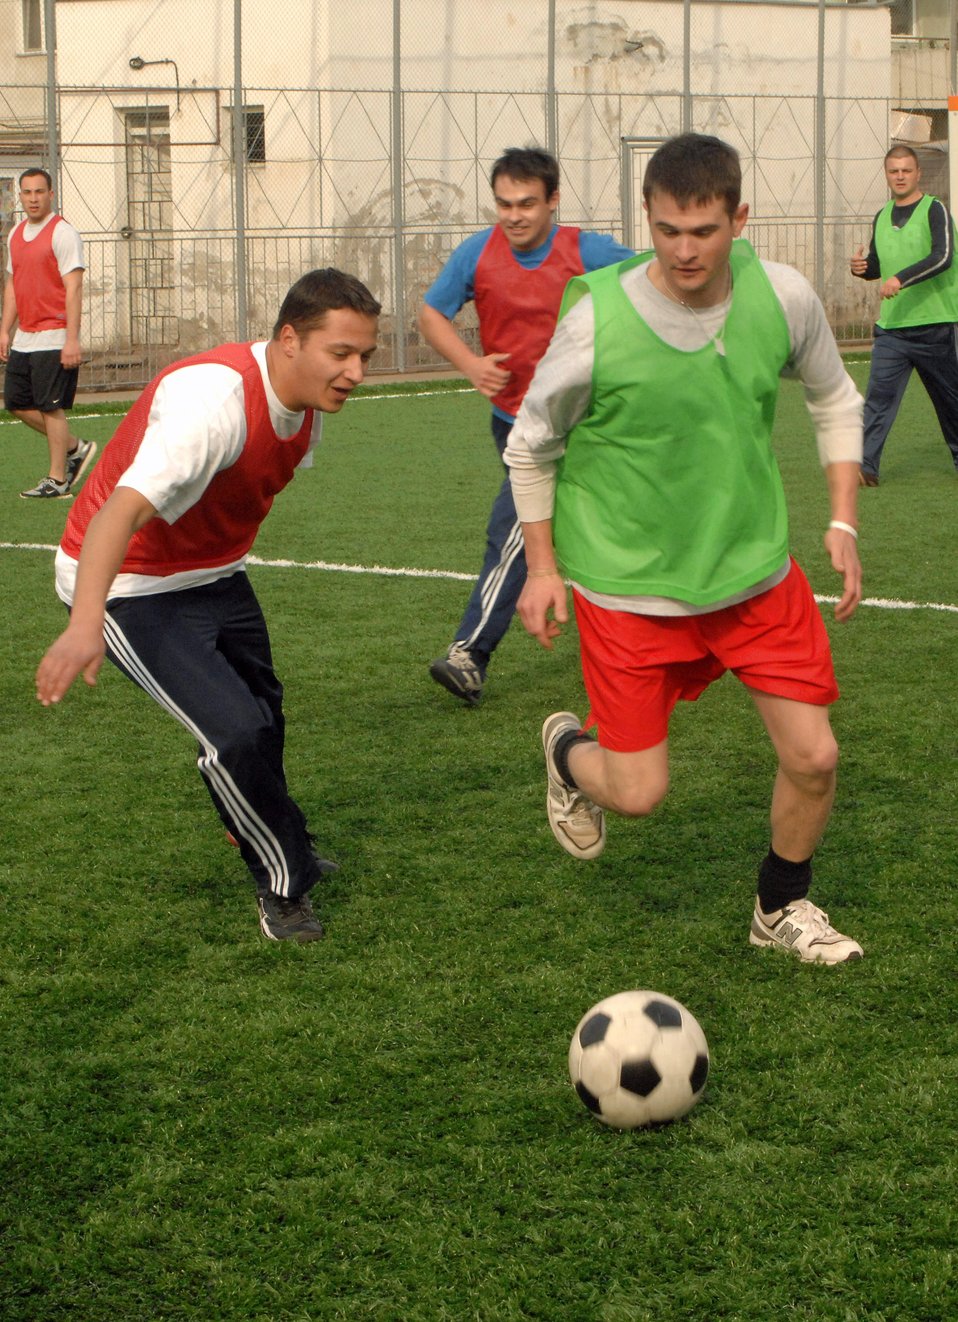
U.S., Romanian airmen break cultural barriers with sports

American Airmen members play soccer with Romanian airmen March 29 at Campia Turzii, Romania. The Airmen are deployed as part of the U.S. military's support to the NATO summit. U.S. Airmen augmented NATO and Romanian forces, ensuring the security of the airspace above Bucharest.